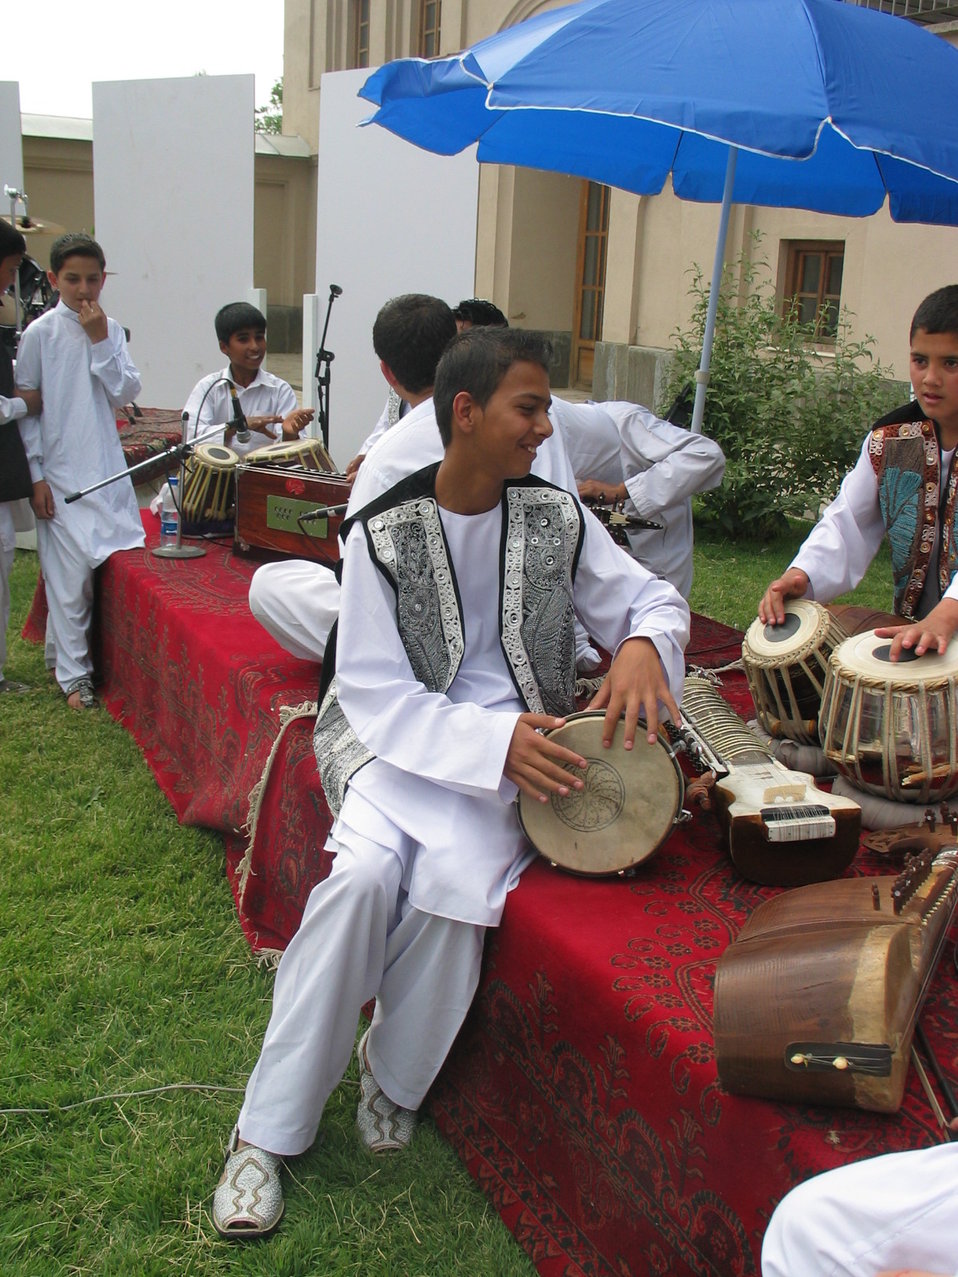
Afghan Youth Voices 005